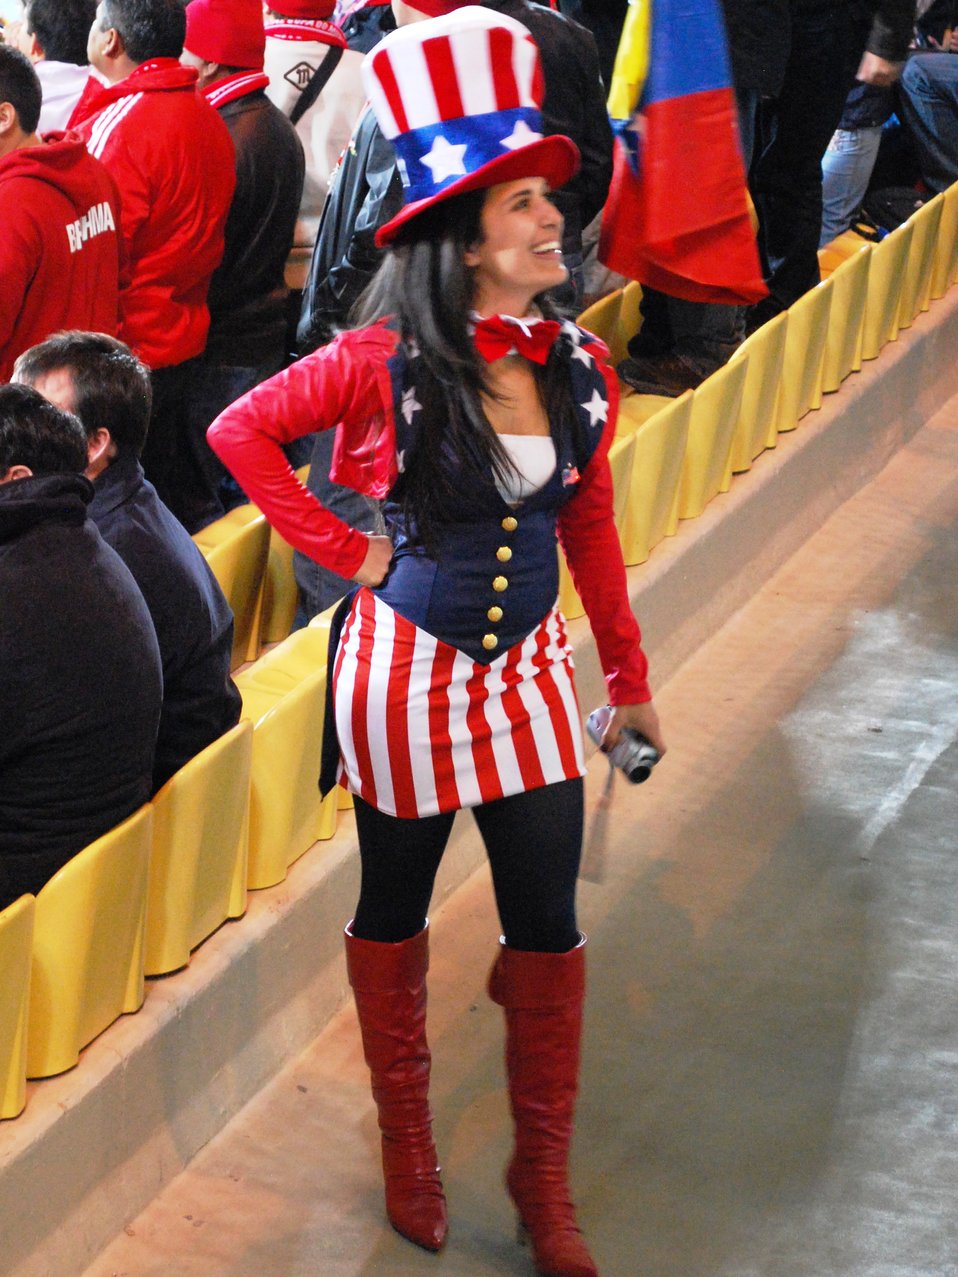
A Team USA fan cheers for the United States during the FIFA 2010 World Cup soccer match between the United States and Ghana on June 26, 2010, at the Royal Bafokeng stadium in Rustenburg, South Africa.